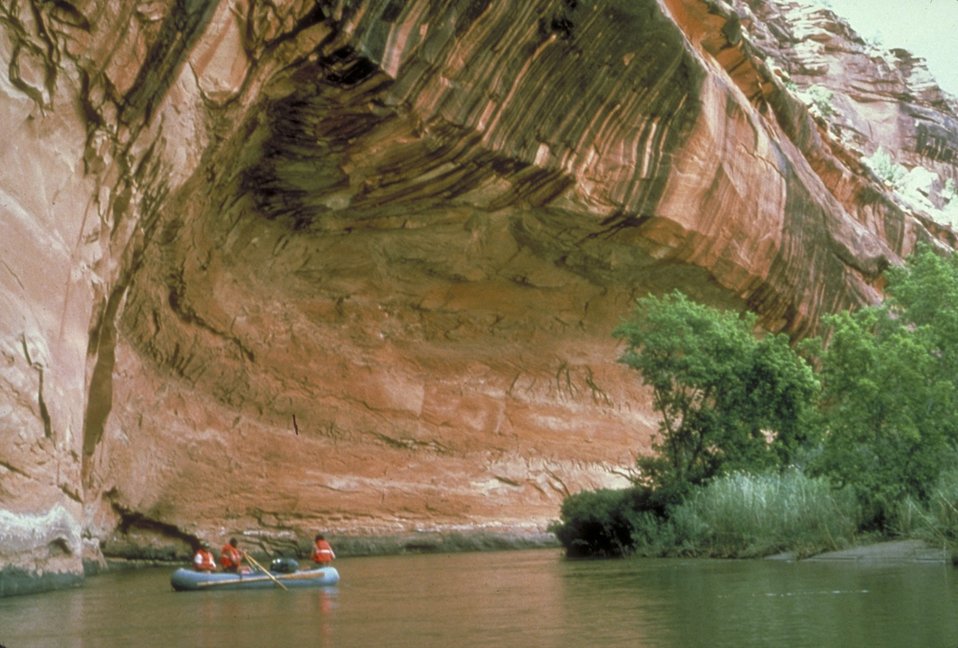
Rafting on the Colorado River in Ruby Canyon.